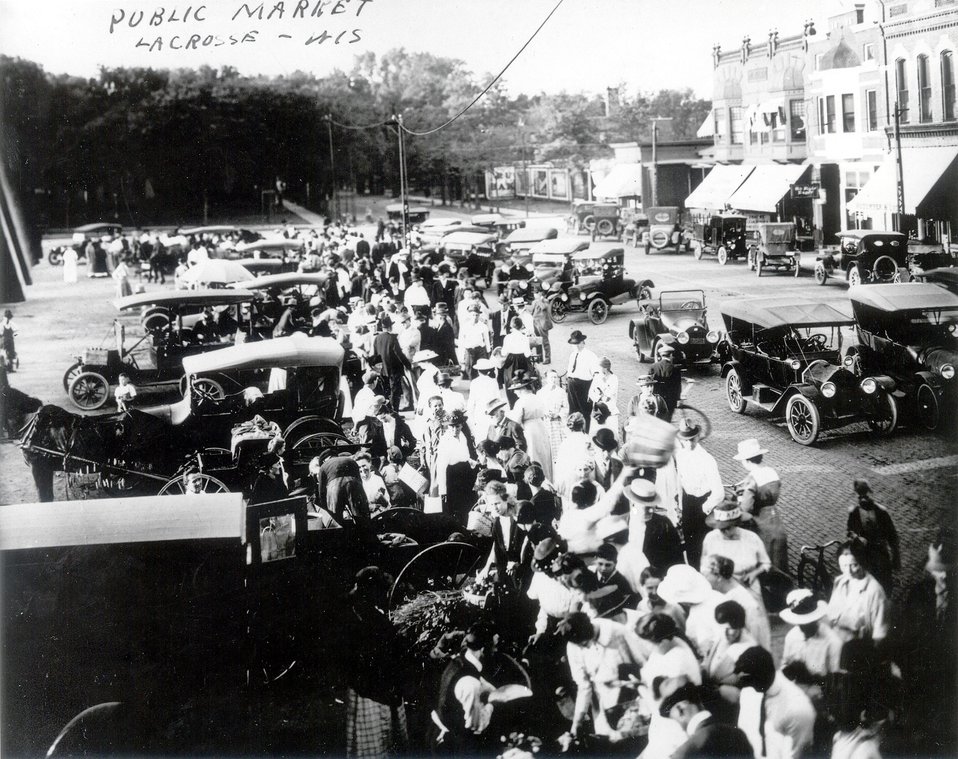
Public Market...LaCrosse, Wisconsin early in the 20th century.